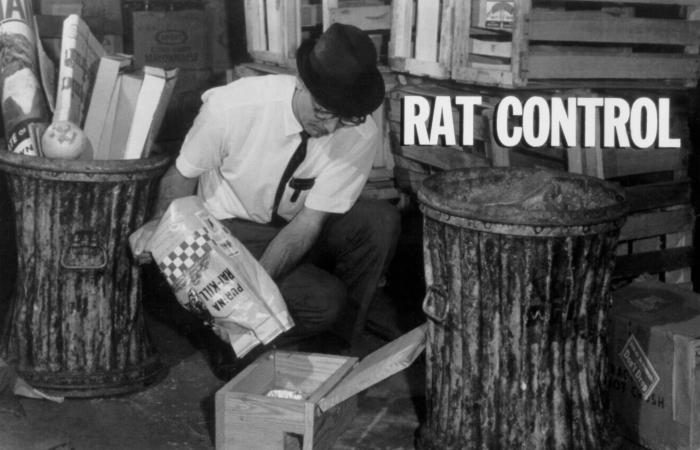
This individual is pouring Rat Kill into a rat box in an attempt to control the rat population in an alleyway.